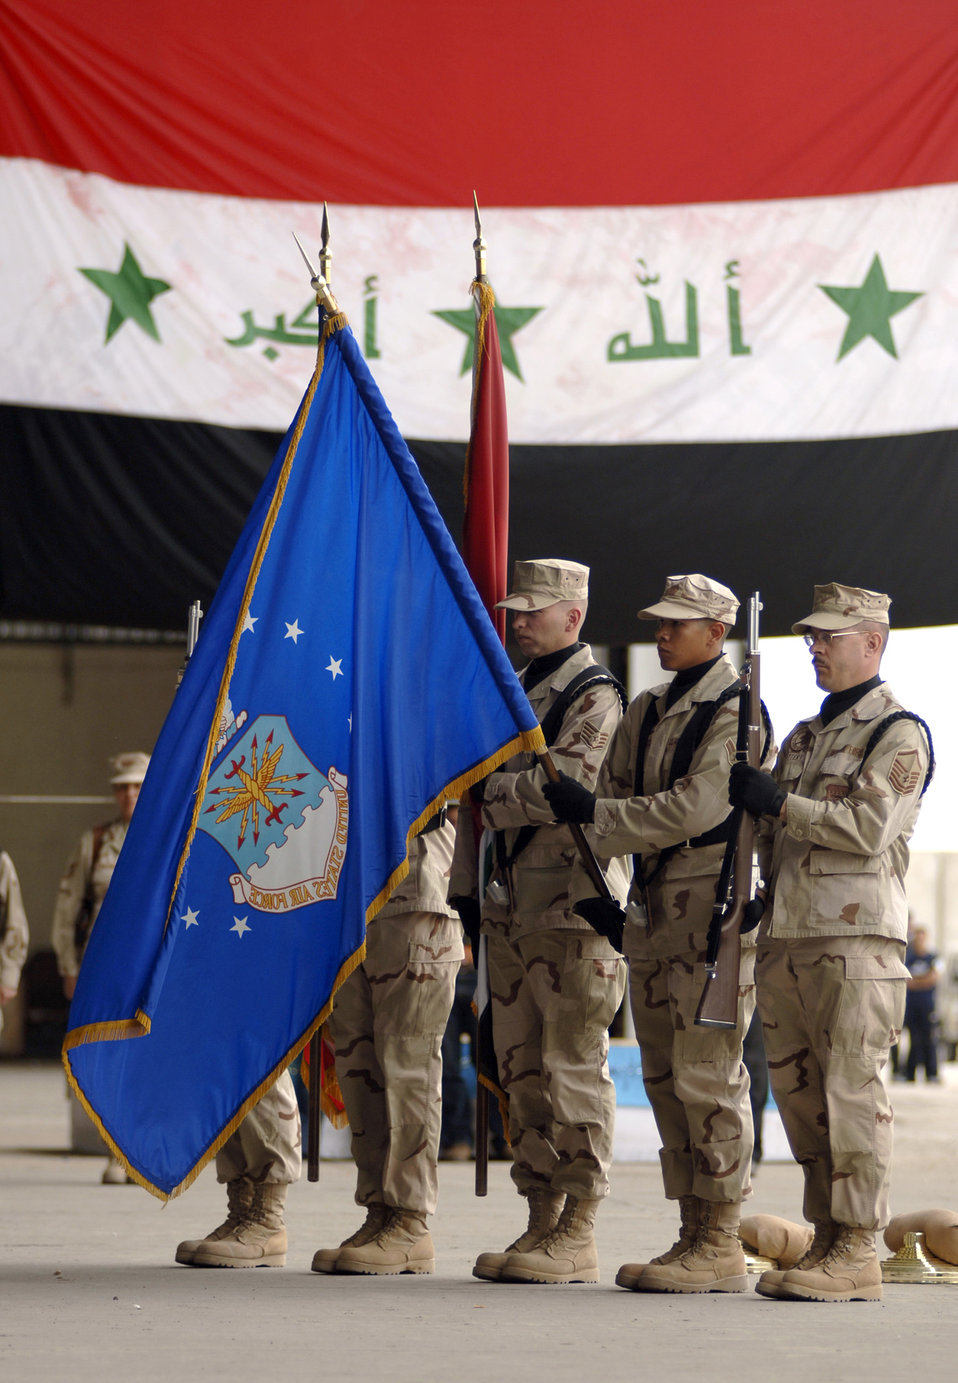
Operation Iraqi Freedom

Baghdad, Iraq -- The Sather Air Base Honor Guard presents the colors at the Unit Activation and Assumption of Command Ceremony for the 370th Air Expeditionary Advisory Group to be commanded by Col. Daniel G. Groeschen on New Al Muthana Air Base April 22.